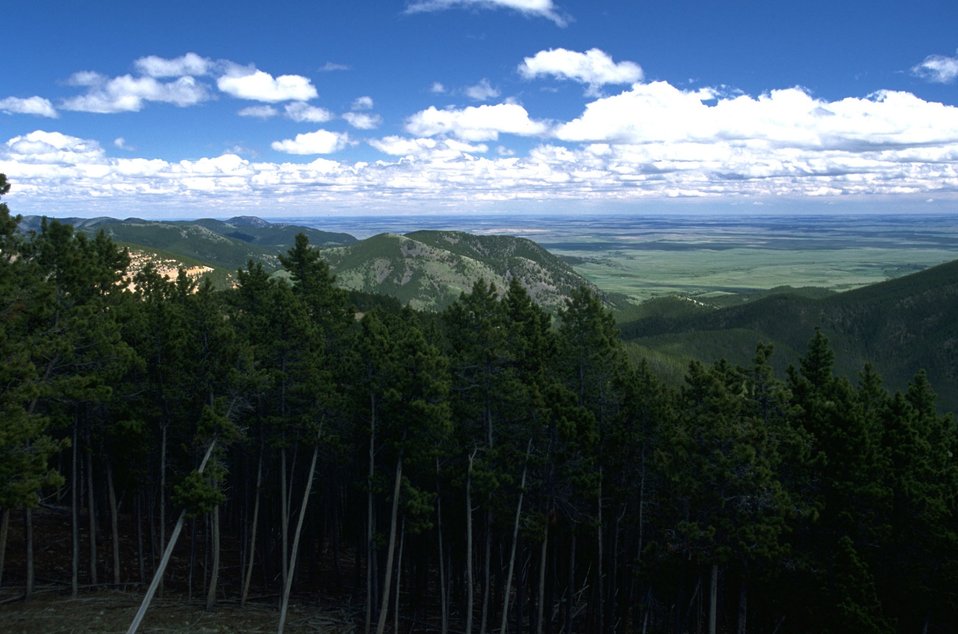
View from the Judith Mountains to the valley floor below